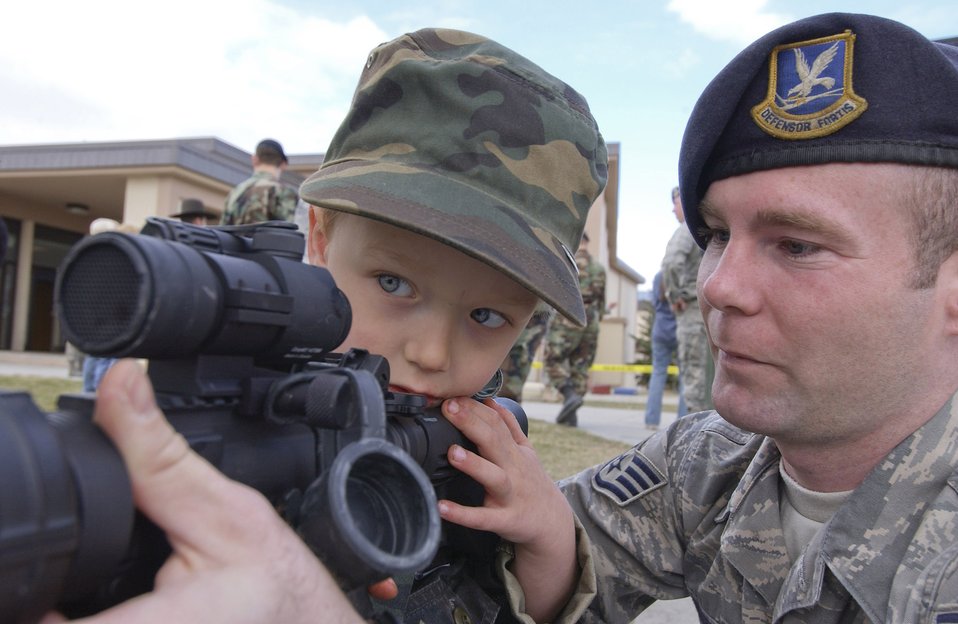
I can see really far away

Bradley Summers peers down a laser dot scope on an M-4 carbine while his father, Staff Sgt. Jerry Summers, holds the weapon May 13 at Eielson Air Force Base, Alaska. The sergeant is assigned to the 354th Security Forces Squadron at Eielson AFB.